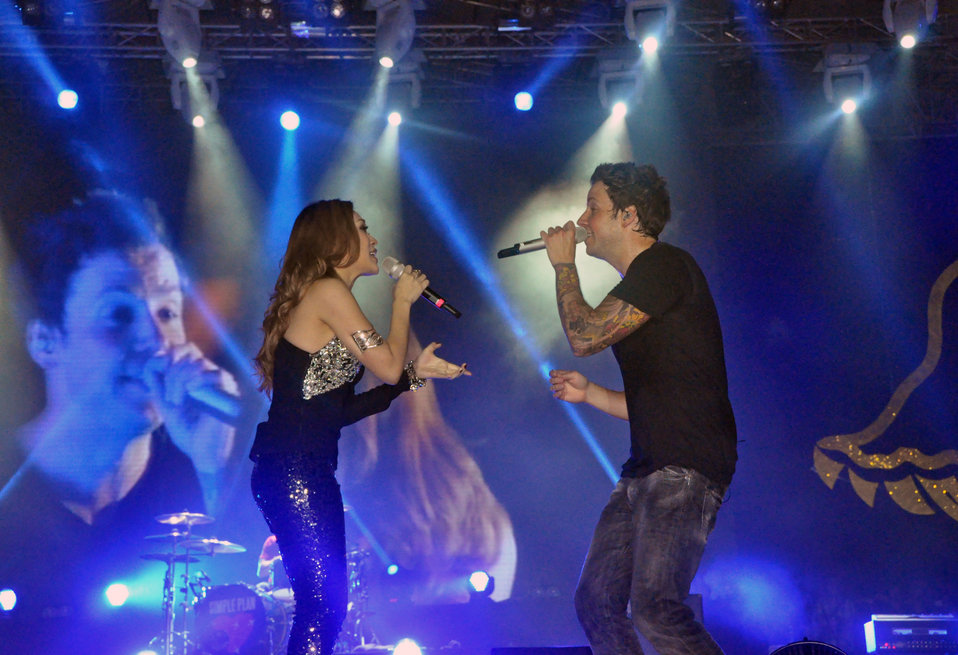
My Tam joins Simple Plan for song on stage

USAID co-sponsors MTV EXIT concert, campaign against human trafficking